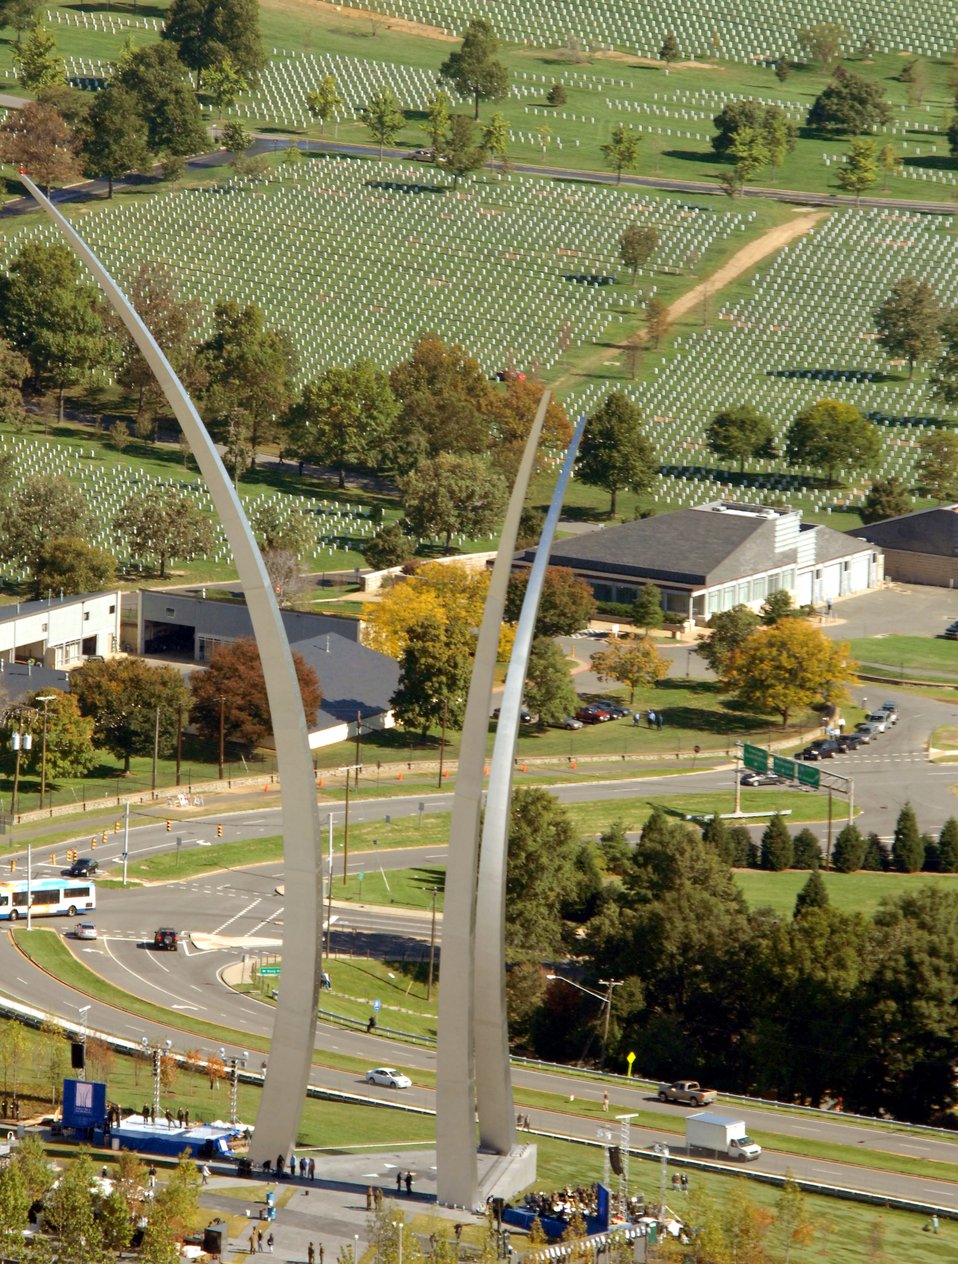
AF Memorial: Warming up for the big show

An aerial view of the Air Force Memorial that overlooks Arlington National Cemetery in Virginia Oct. 13. The memorial will be officially dedicated during a ceremony Oct. 14. An Air Force open house will be held near the Pentagon in conjunction with the dedication ceremony that will feature performances by the U.S. Air Force Band, the U.S. Air Force Honor Guard drill team, and a concert by country music performer LeeAnn Womack.